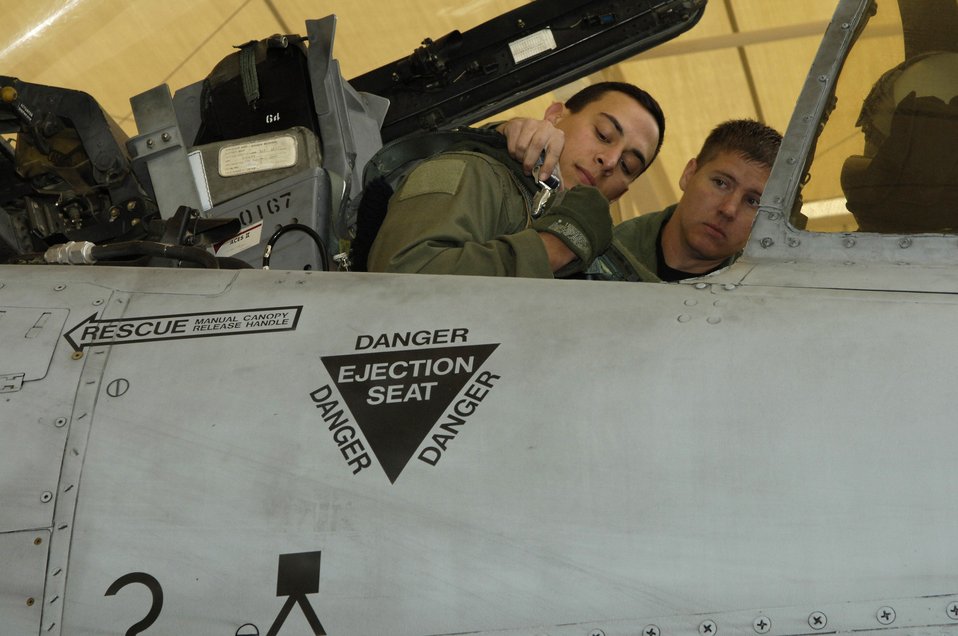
Taking an A-10 from pre-flight to flight

Tech. Sgt. Jerome Westbrook helps Capt. Andrew Tenenbaum strap into his A-10 Thunderbolt II Oct. 29 prior to a mission. Sergeant Westbrook is assigned to the 355th Aircraft Maintenance Squadron and Captain Tenenbaum is a pilot in the 354th Fighter Squadron at Davis-Monthan Air Force Base, Ariz.